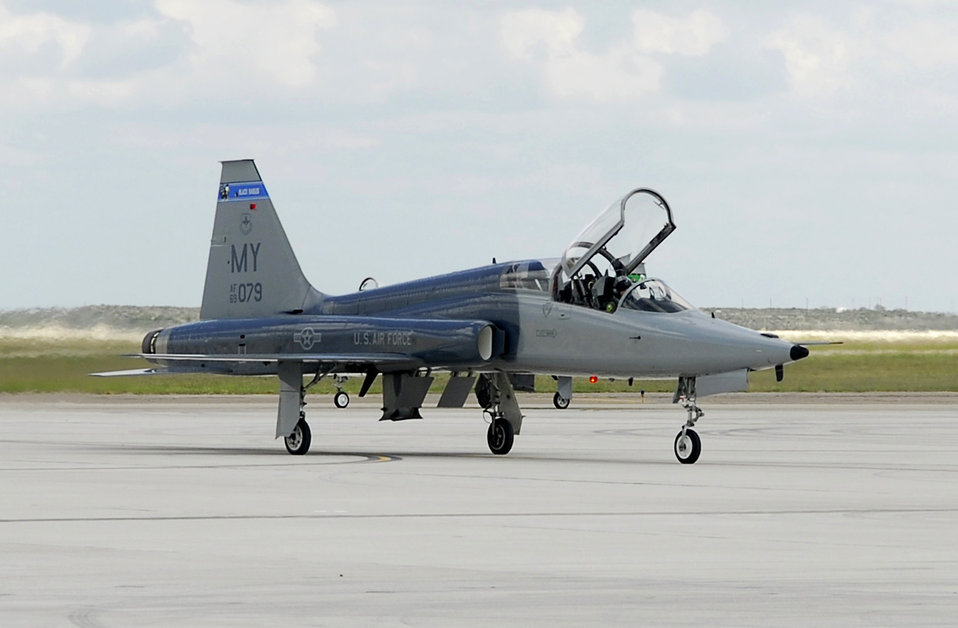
T-38s at Laughlin mark beginning of transition

The first